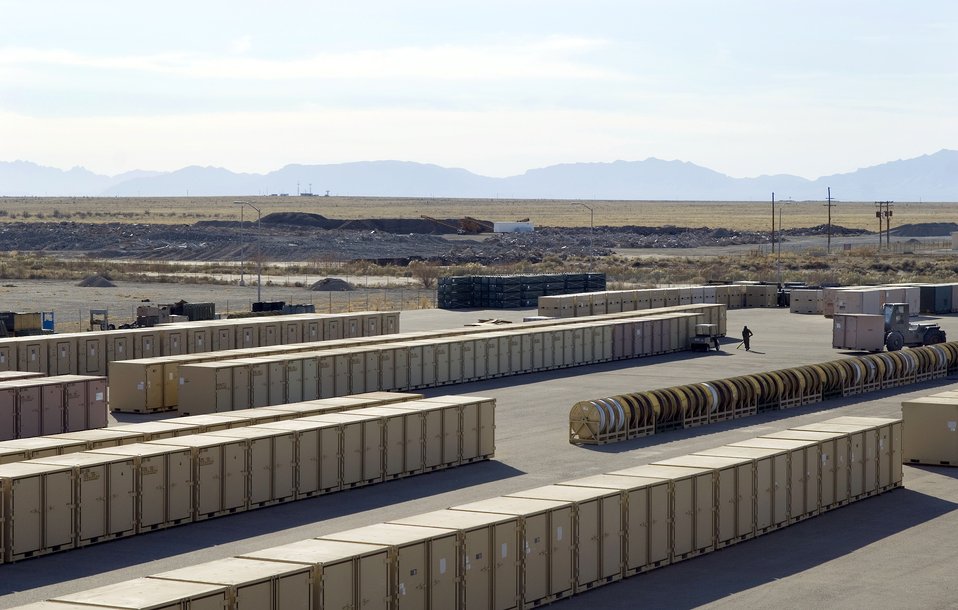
Providing shelter is a BEAR

Rows of containment units fill the tarmac for the Basic Expeditionary Airfield Resource, or BEAR, facility of the 49th Material Maintenance Group Jan. 16 at Holloman Air Force Base, N.M. Each containment unit houses a integral piece of a BEAR base set which include tents, kitchens, dining facilities, showers, latrine facilities, power generators and reverse osmosis water purification systems. BEAR assets can be placed, prepared and deployed around the world to support combat operations or humanitarian efforts.